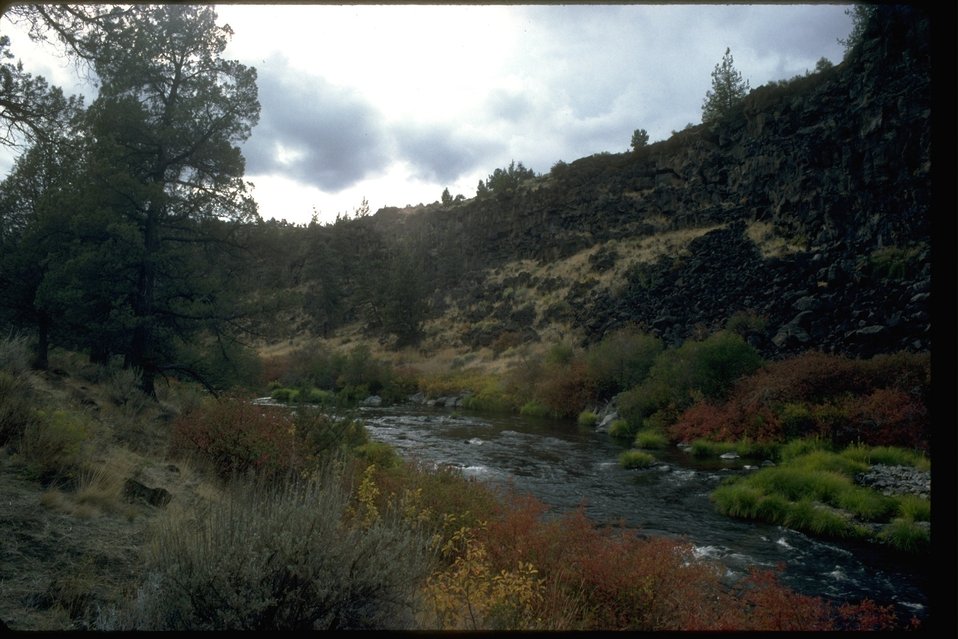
The bright colors ofthe riparian area around Steelhead Falls. OR 5-14